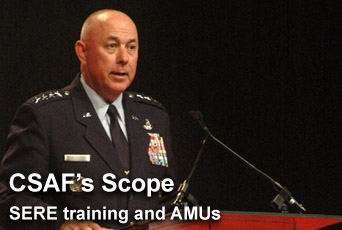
CSAF's Scope highlights SERE training, AMU reorganization

The CSAF's Scope focuses on current topics the Air Force chief of staff feels are of special importance to today's Airmen, and among Gen. T. Michael Moseley's top issues are revamping survival, evasion, resistance and escape training for Airmen and reorganizing aircraft maintenance units.